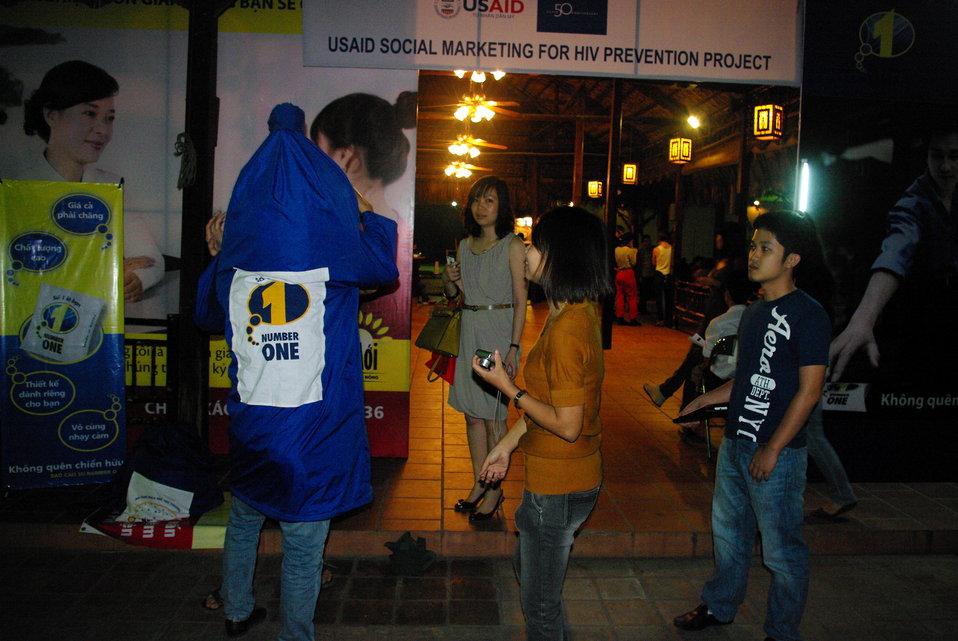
PEPFAR, U.S. Embassy Host Dengue Fever Concert in Hanoi

Dengue Fever exhibit